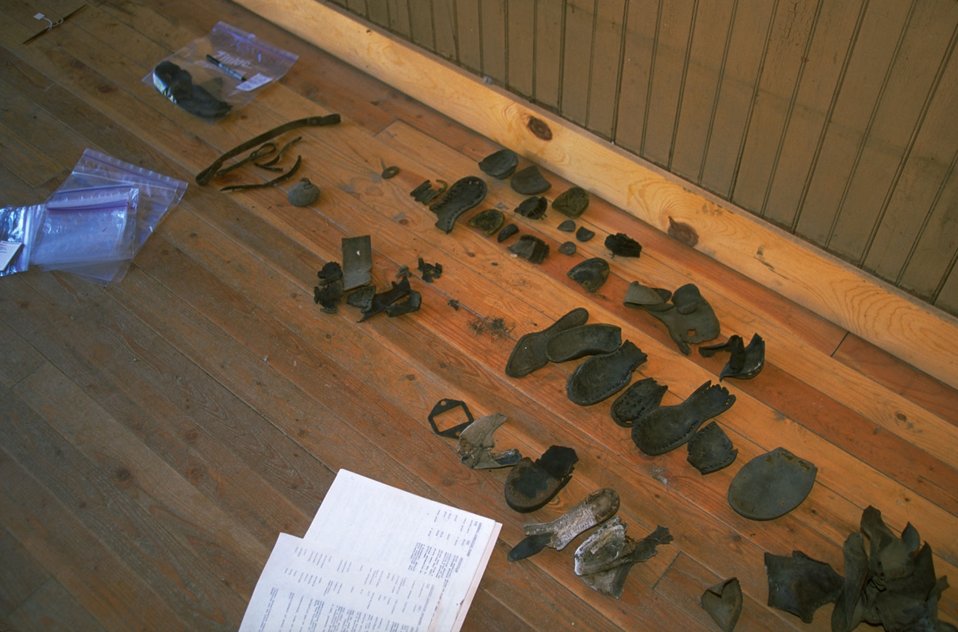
Historic artifacts inside a building at Garnet Ghost Town